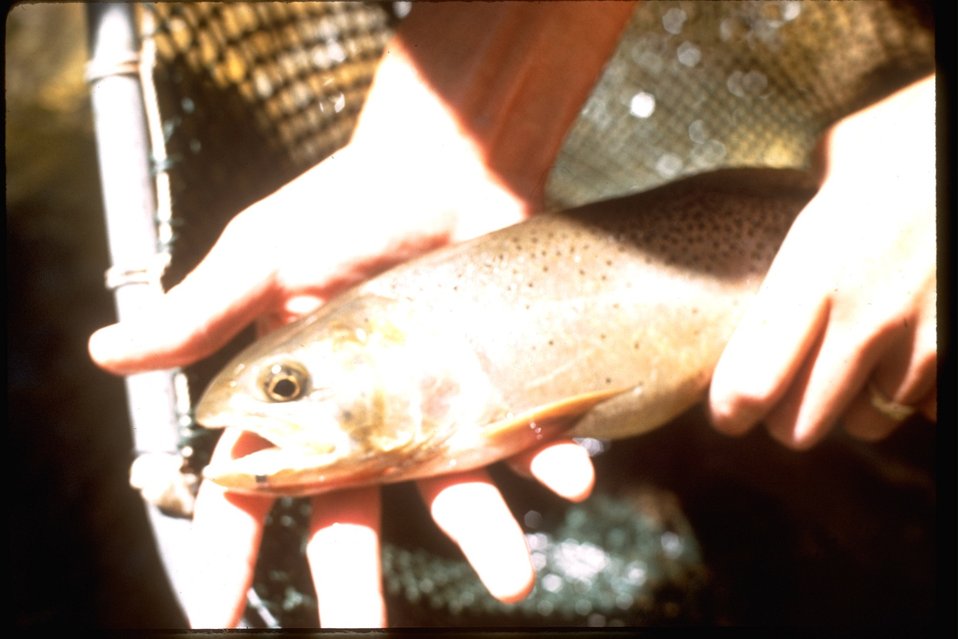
A fisherman holding his trout.